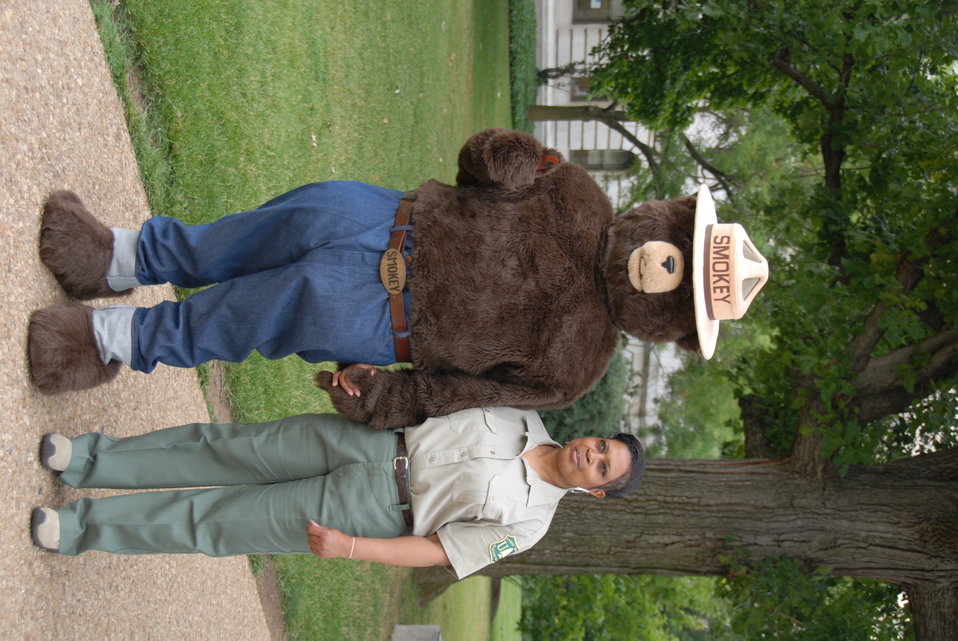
Smokey Bear is the mascot of the U.S. Department of Agriculture (USDA) U.S. Forest Service (FS) created to educate the public about the dangers of forest fires. The fictional character Smokey Bear is administered by three entities: the U.S. Forest Service, the National Association of State Foresters, and the Ad Council. The U.S. federal law, Smokey Bear Act of 1952 protects the name and image of Smokey Bear.